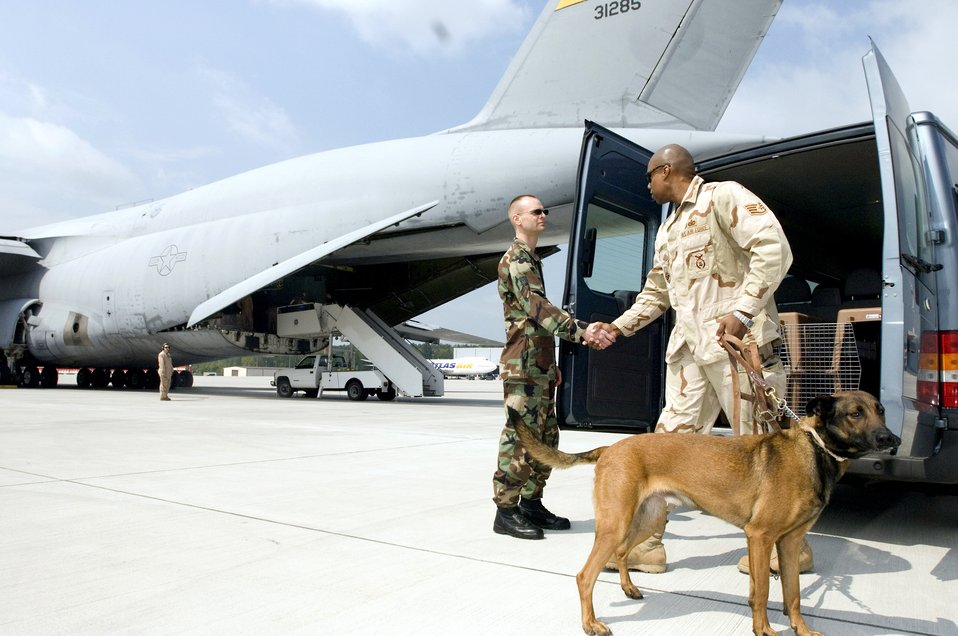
Sergeant's job is for the dogs

Staff Sgt. Robert Van Hulle (left) says goodbye as Staff Sgt. Markus Hunt and his military working dog, Diego, prepare to board an aircraft at Ramstein Air Base, Germany, on Tuesday, May 9, 2006. Sergeant Van Hulle is the 435th Security Forces Squadron military dog handler liaison. Sergeant Hunt and Diego were returning to Misawa Air Base, Japan, after a six-month tour supporting Operation Iraqi Freedom.